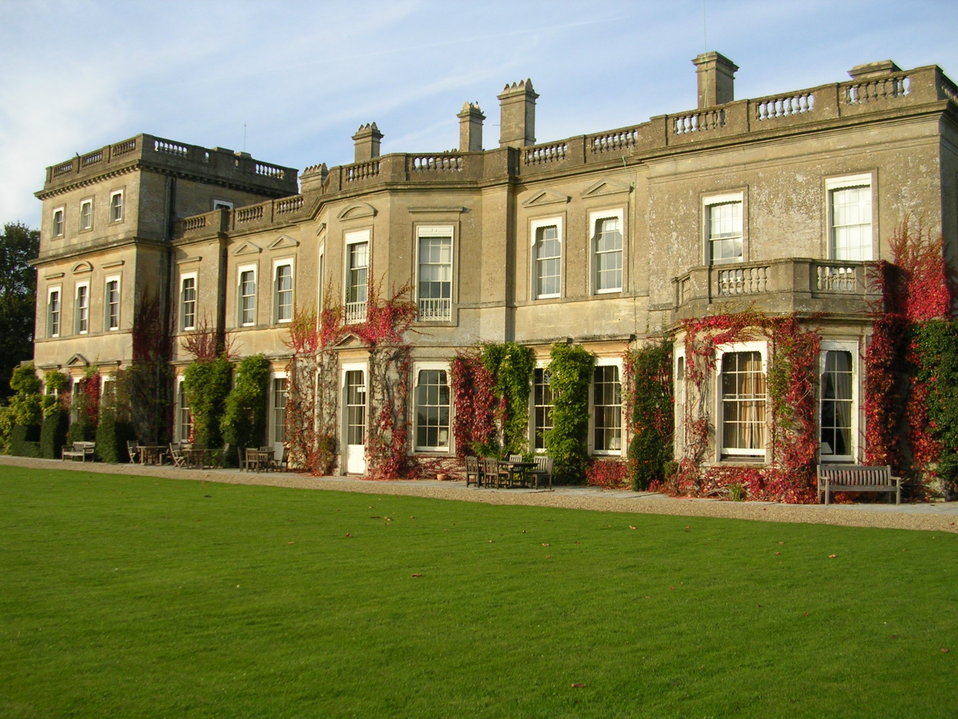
A house photographed by User:Giano who releases all rights. 18th century mansion built of Bath stone, with Italianate alterations.